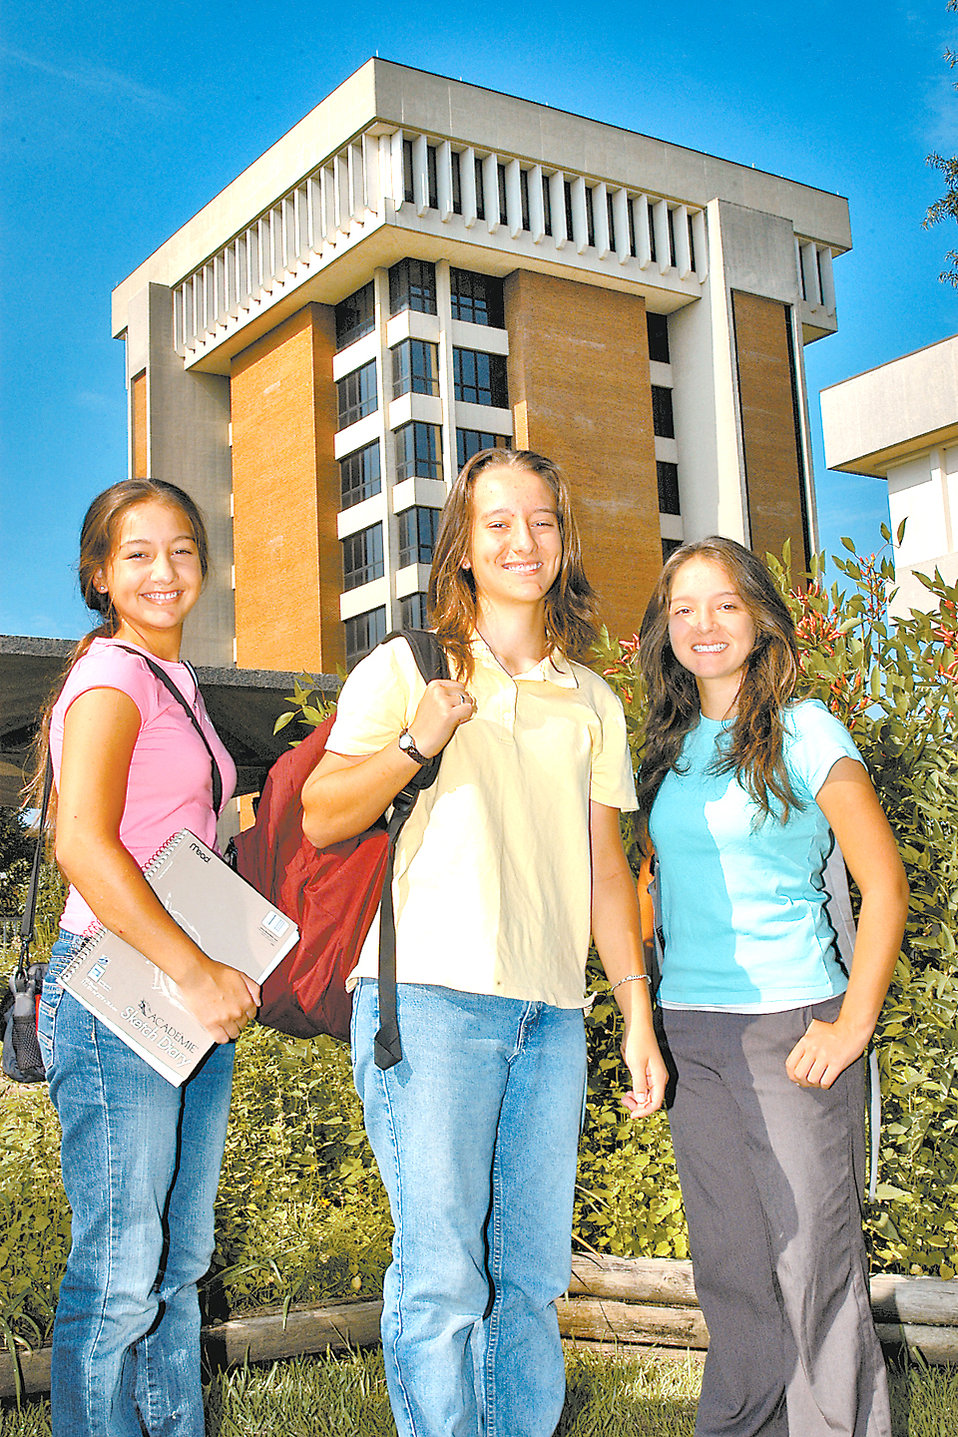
Maxwell teen graduates college

(From left) Sisters Rosannah, 15, Hannah, 17, and Serennah Harding, 14, stand in front of the Auburn University at Montgomery campus. All three college students are daughters of Capt. Kitchener Harding, an Officer Training School instructor at nearby Maxwell Air Force Base. The oldest will begin graduate school in the fall.